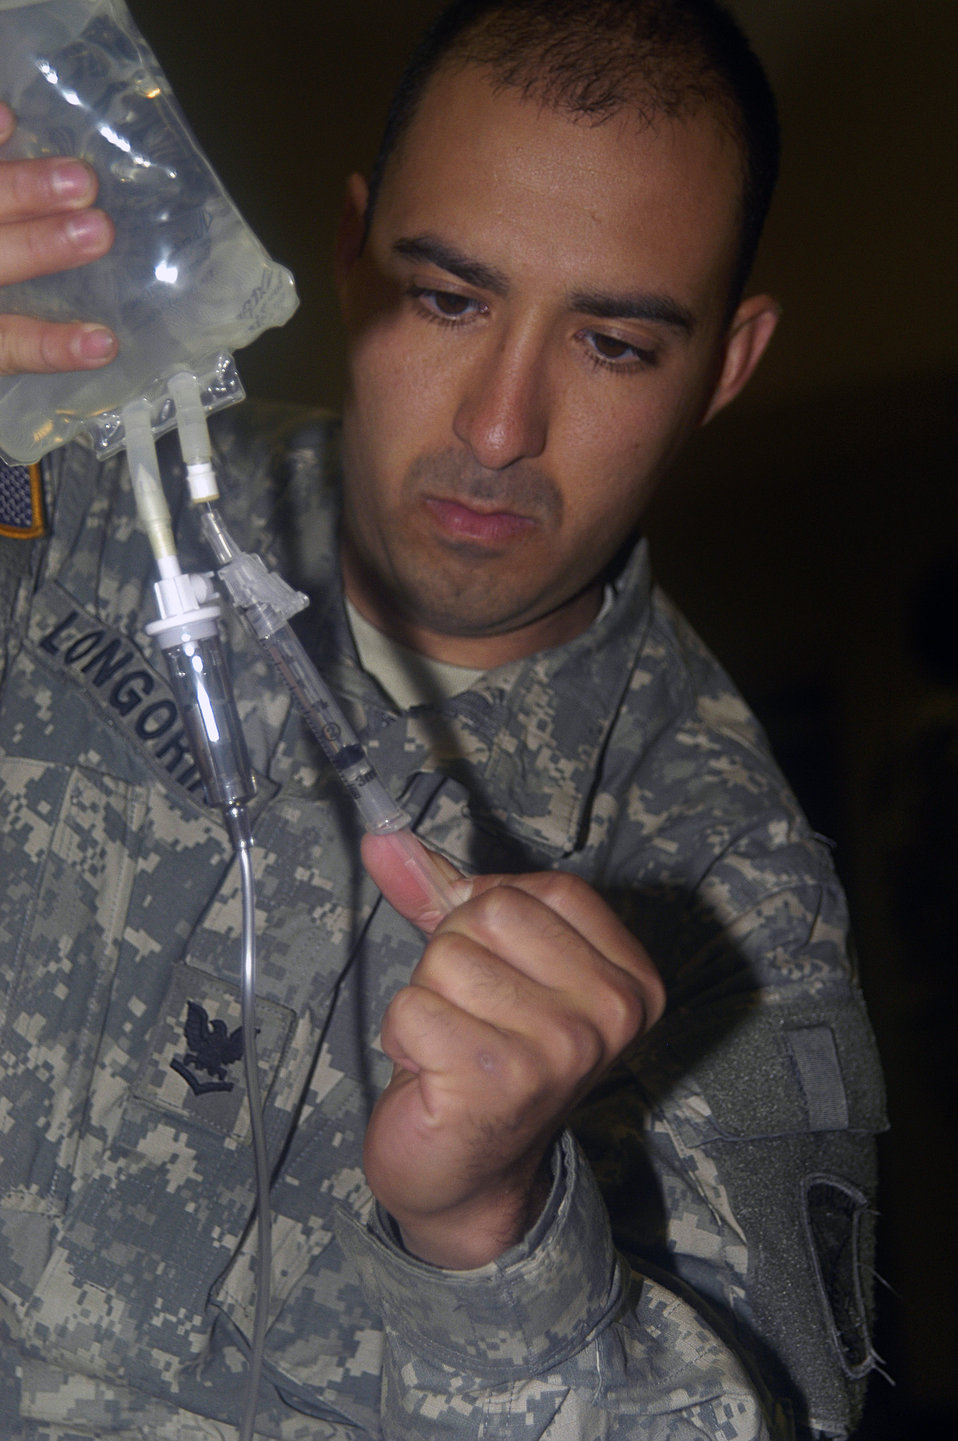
Servicembers prepare for Afghan deployments

Navy Petty Officer 3rd Class Armondo Longoria flushes out an intravenus line in preparation for administering an IV during Combat Lifesaver Skills training Sept. 24 at Fort Bragg, N.C. Combat Lifesaving Skills training is part of the Combat Skills Training Airmen, Sailors and Soldiers are receiving prior to their Provincial Reconstruction Teams' deployments to Afghanistan. Petty Officer Longoria is assigned to the Paktika PRT, one of 12 teams deploying to Afghanistan in November.